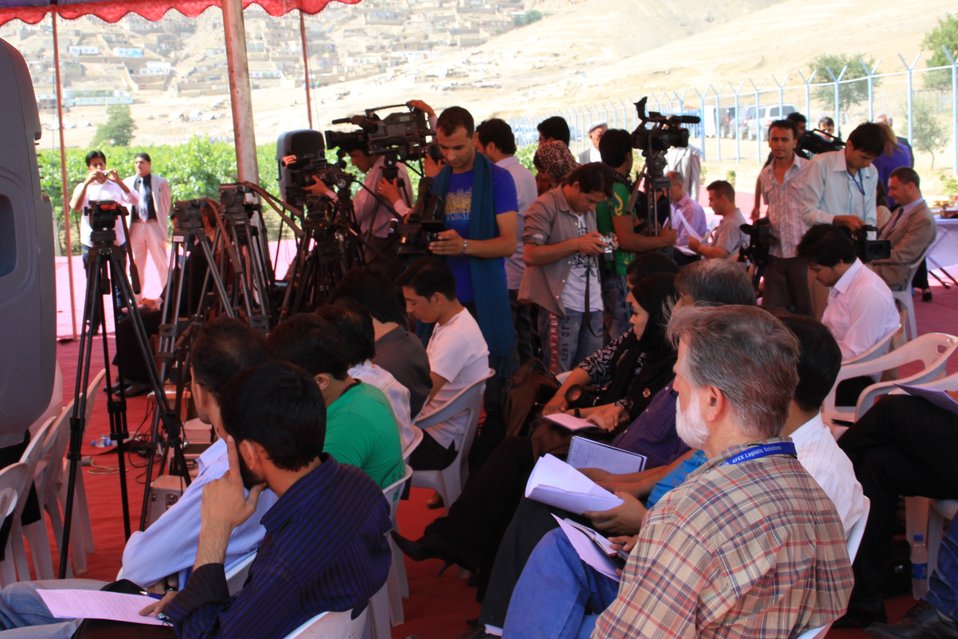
Badam Bagh Farm